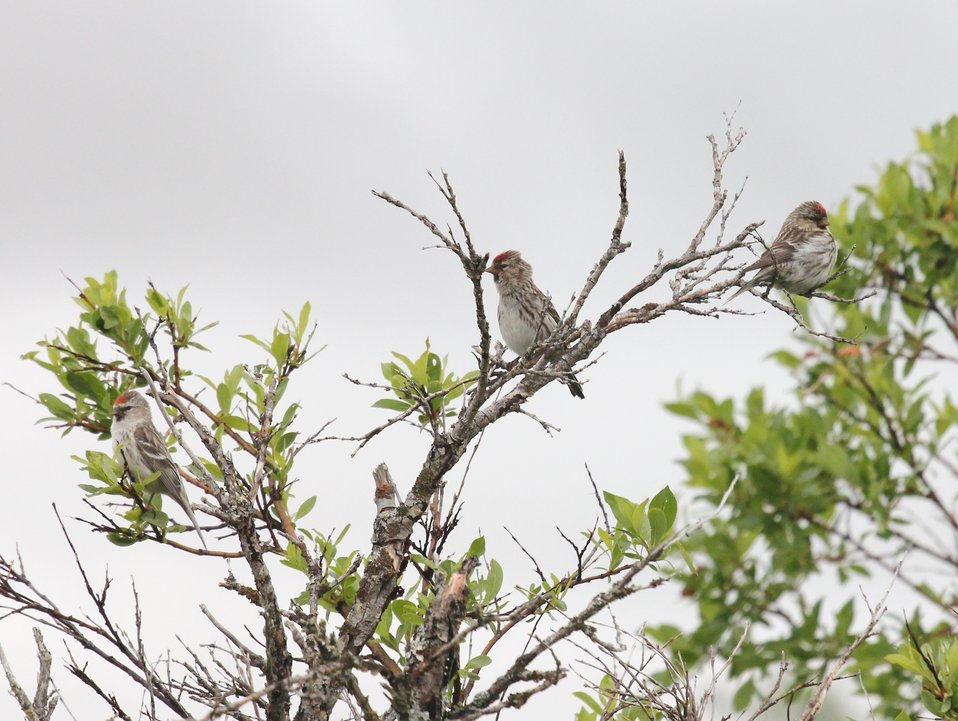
Redpolls

Andreafsky wilderness, Yukon Delta National Wildlife Refuge